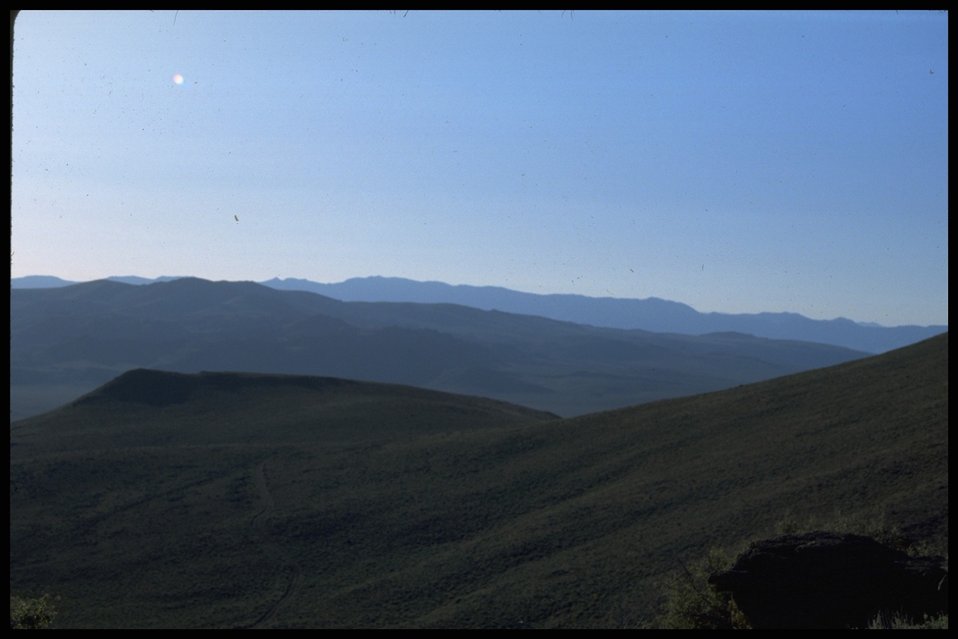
Scenic view of distant mountains. Lakeview District.